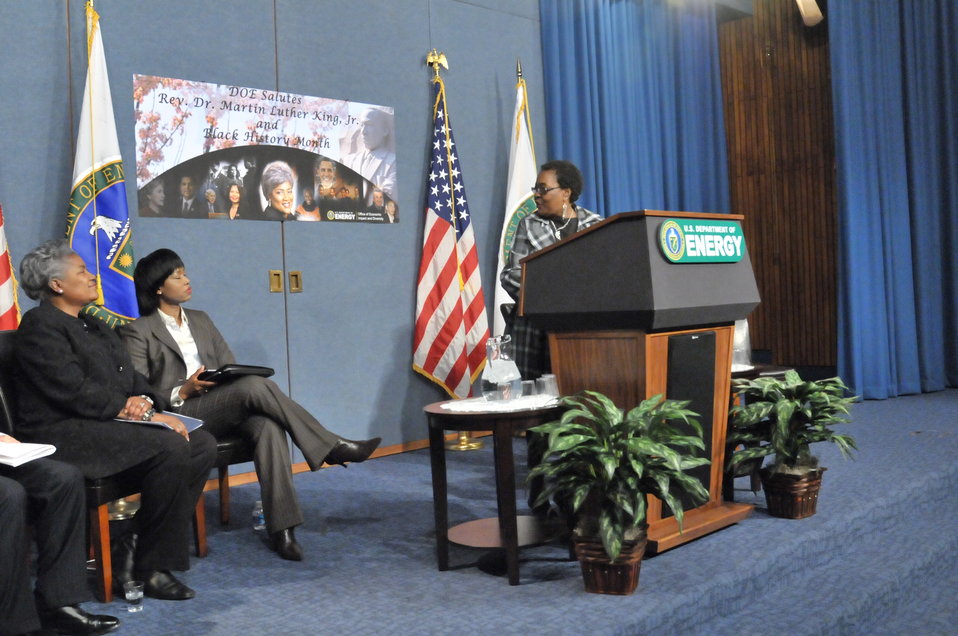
DEPARTMENT OF ENERGY -MARTIN LUTHER KING / BLACK HISTORY MONTH COMMEMORATIVE PROGRAM WITH DOE SECRETARY E. MONIZ IN ATTENDANCE